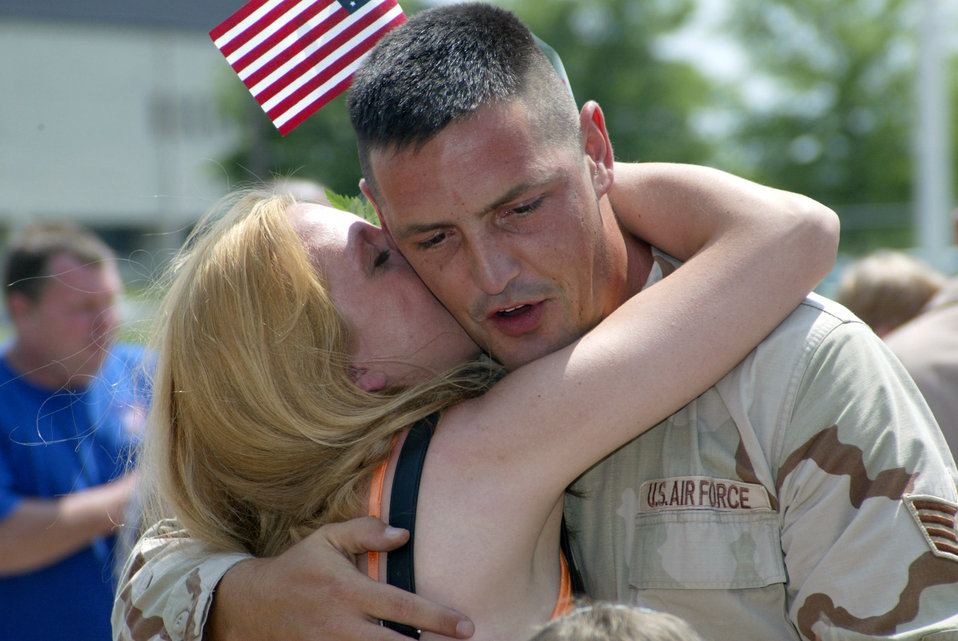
Safe in the arms of love

OPERATION IRAQI FREEDOM -- Staff Sgt. Chris Walton hugs his wife, Jennifer, on the flightline here May 10 after returning home from a deployment supporting Operation Iraqi Freedom. Walton is assigned to the base's 43rd Aircraft Maintenance Squadron.